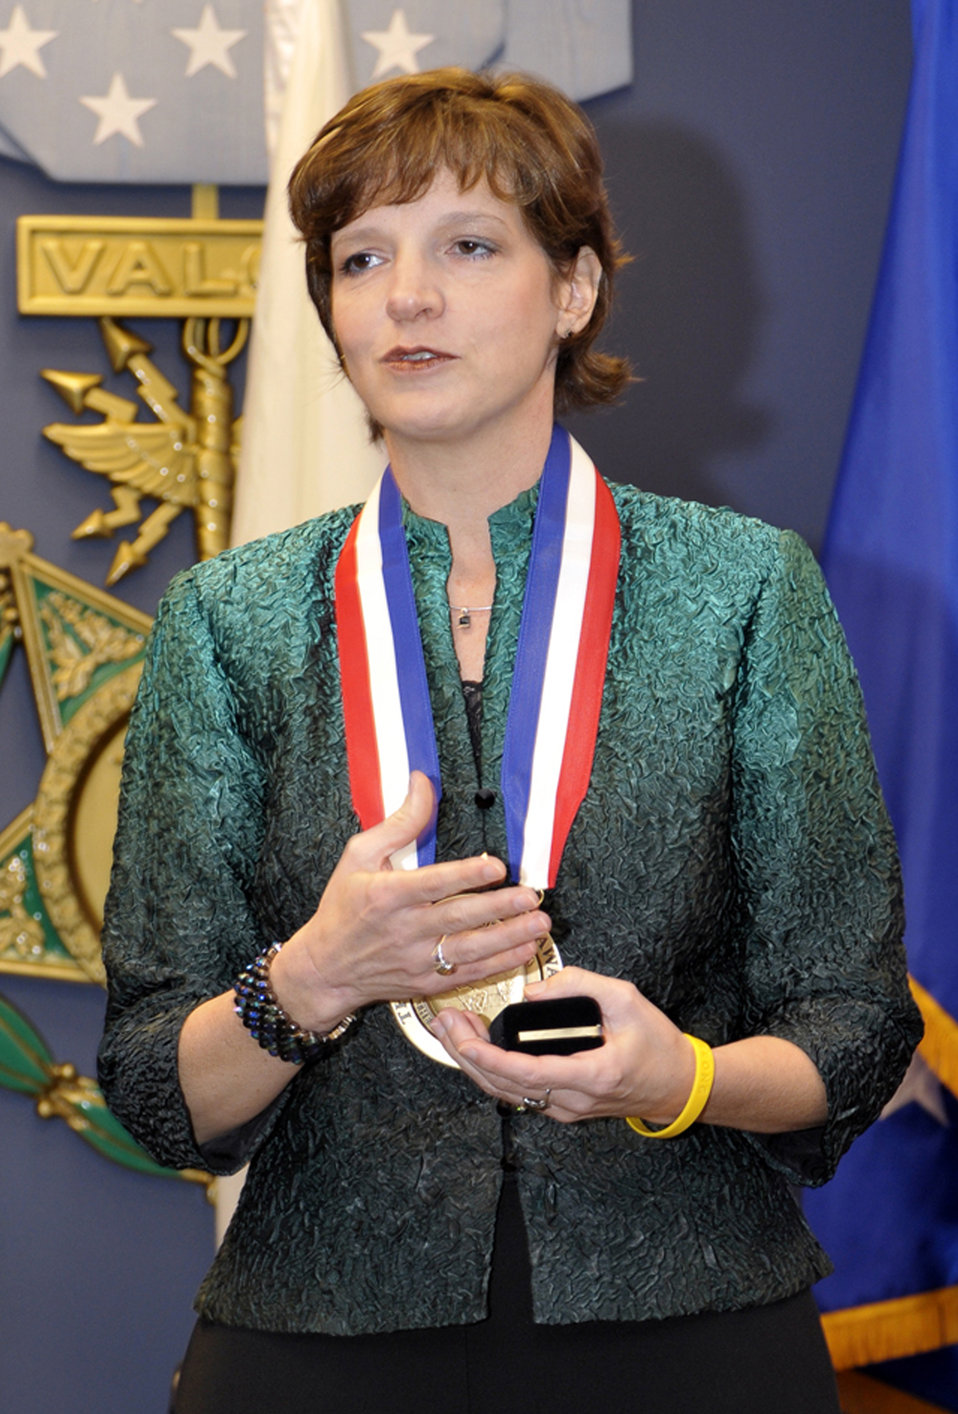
Spirit of Hope Award

Virginia Dosedel thanks her family and supporters following the presentation of the Spirit of Hope Award, during an Oct. 27, 2009, Pentagon ceremony presided over by Secretary of the Air Force Michael Donley and Linda Hope, daughter of Bob Hope.